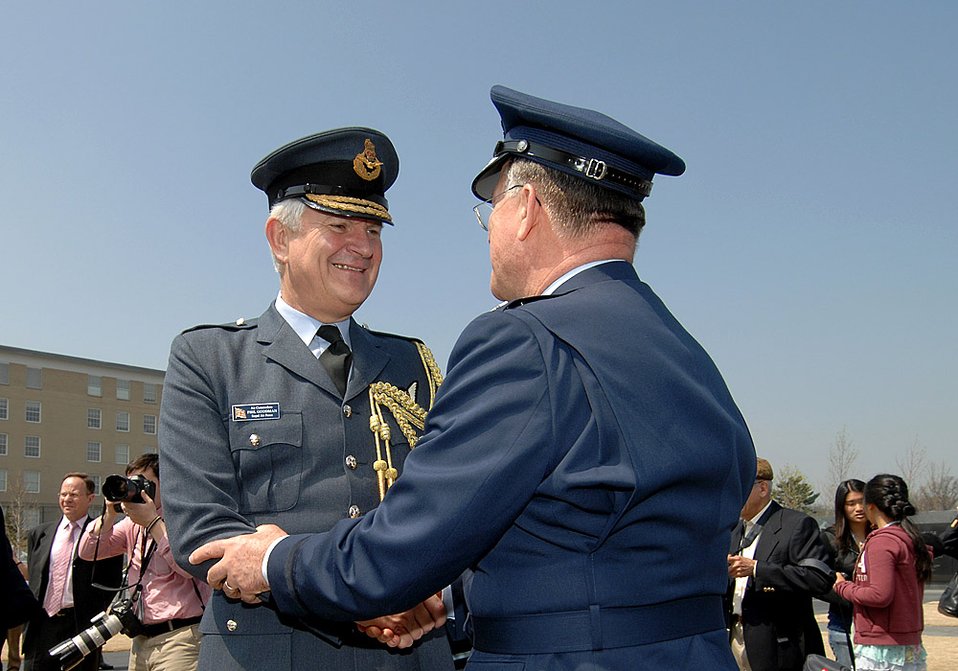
Heritage flight

Royal Air Force Air Commodore Phil Goodman shakes hands with Lt. Gen. John A. Bradley during a ceremony honoring the 30,000 American Airmen who gave their lives flying from British bases during World War II April 10 at the Air Force Memorial in Arlington, Va. The event was arranged by the American Air Museum at Duxford, England, which is celebrating its 10th anniversary. The first Americans to serve in England were based at Duxford in 1918. During World War II it was also home to the 78th Fighter Group from 1943 to 1945. Former British Prime Minister John Major served as guest of honor for the ceremony. General Bradley is the chief of the Air Force Reserve.